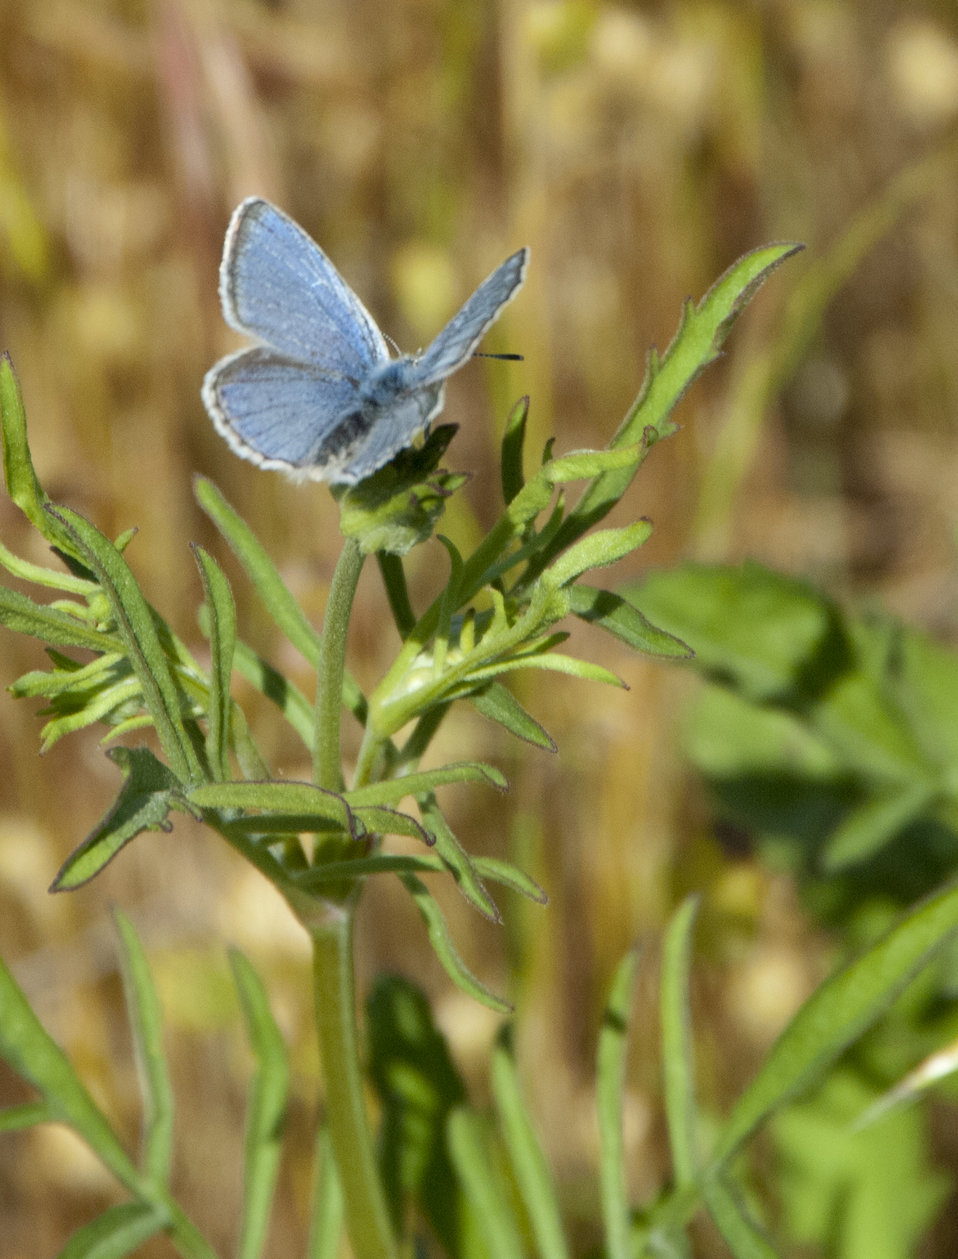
Mission Blue Butterfly-male

The endangered Mission blue butterfly (Icaricia icarioides missionensis) is a small, delicate butterfly with a wingspan of about 1 to 1.5 inches. Sarah Swenty/USFWS